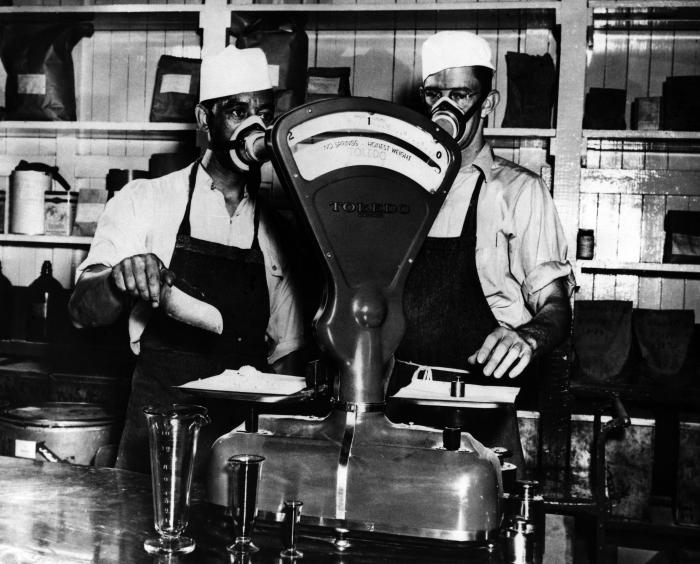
This historic image, provided by the Center for Disease Control's (CDC), National Institute for Occupational Safety and Health (NIOSH), depicted two industrial workers who were in the process of weighing an unknown chemical powder on a scale, while wearing protective breathing masks. Though they were filtering their inhaled air, they were not wearing, what today would be requisite, goggles, or gloves, which would have further protected their eyes and skin from accidental contamination. This image, and many others like it, was used to document the many aspects of various industrial activities, so as to better understand these workplace environments, and their associated hazards. In gaining a better understanding of workplace hazards, protocol-formulating bodies such as NIOSH, are better able to create a safer workplace through substantiation of appropriate safety regulations.